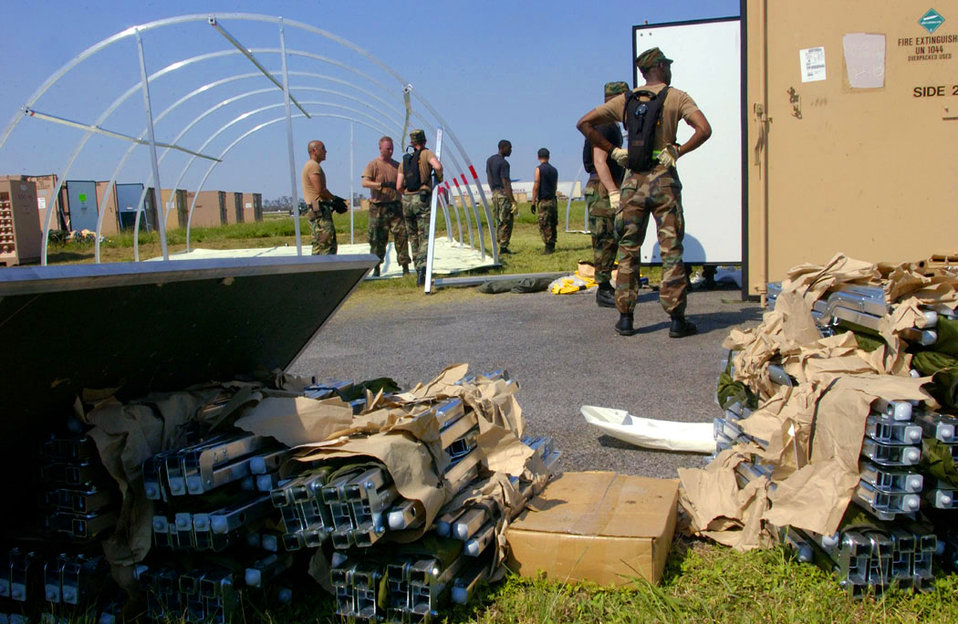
tent city

NEW ORLEANS -- Airman erect tents at Louis Armstrong International Airport here Sept. 4. The tents were flown in from the 49th Materiel Maintenance Group at Holloman Air Force Base, N.M., to house workers supporting the Hurricane Katrina relief effort.